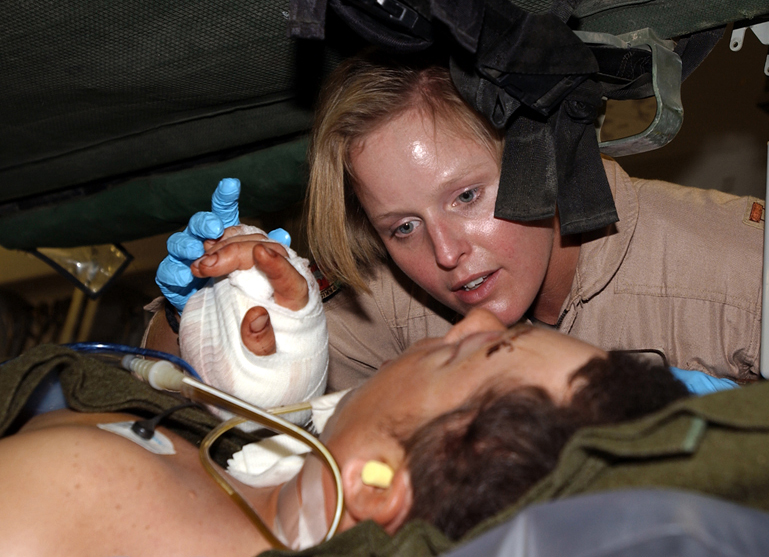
In-flight care

OPERATION ENDURING FREEDOM (AFPN) -- Capt. Kristen McCabe holds a soldier's hand and talks to him during his flight to Germany. The special forces soldier was seriously injured in an ambush in southern Afghanistan recently. McCabe is a Critical Care Aeromedical Transport Team nurse with the 438th Expeditionary Aeromedical Evacuation Squadron.